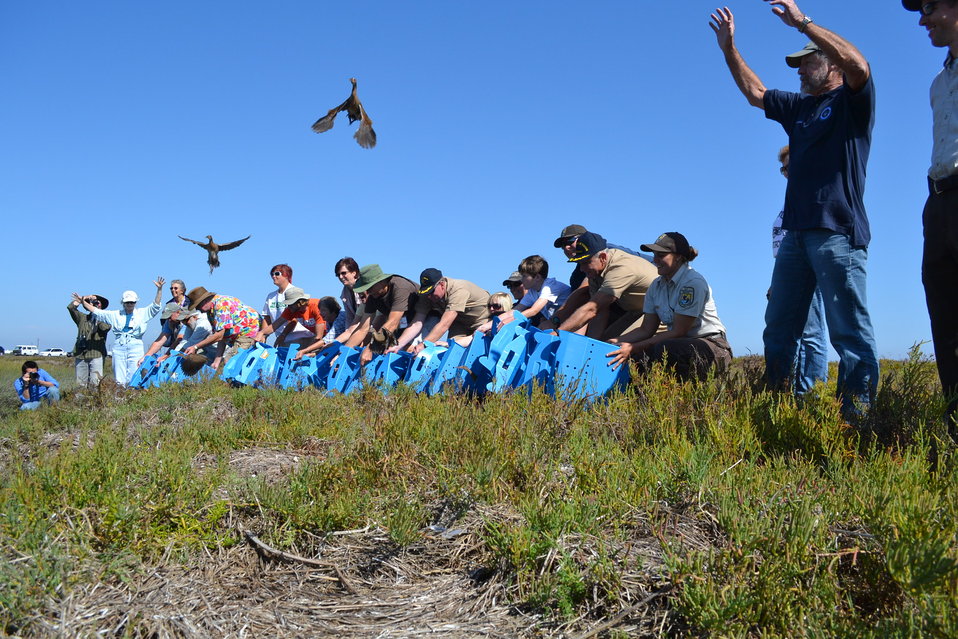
Light-footed clapper rails being release on Seal Beach National Wildlife Refuge

Seal Beach National Wildlife Refuge was the location of the last release of the season on September 29, 2011. Lisa Cox/USFWS